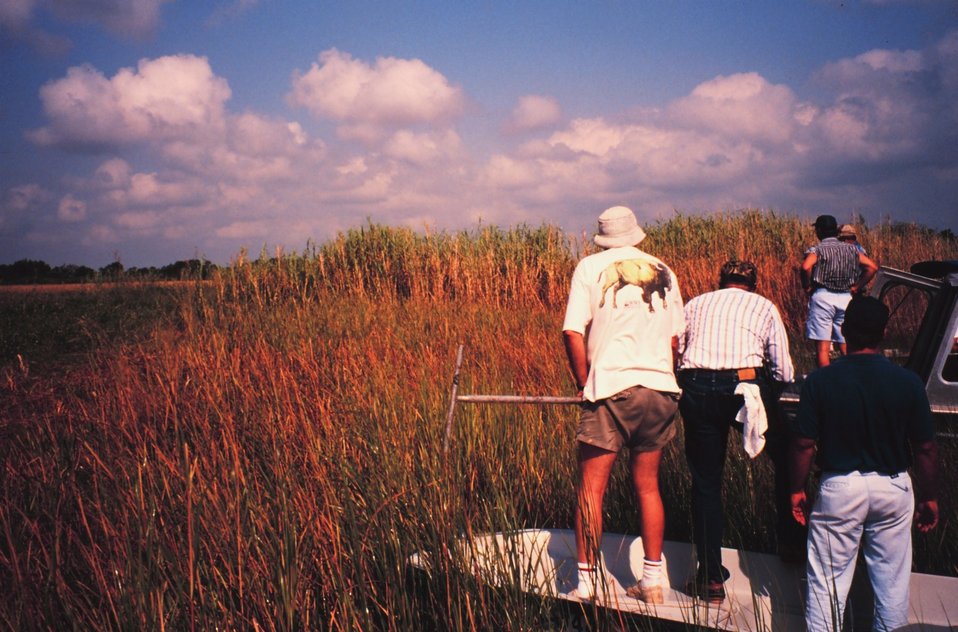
Wetland scientists evaluating potential marsh restoration project.